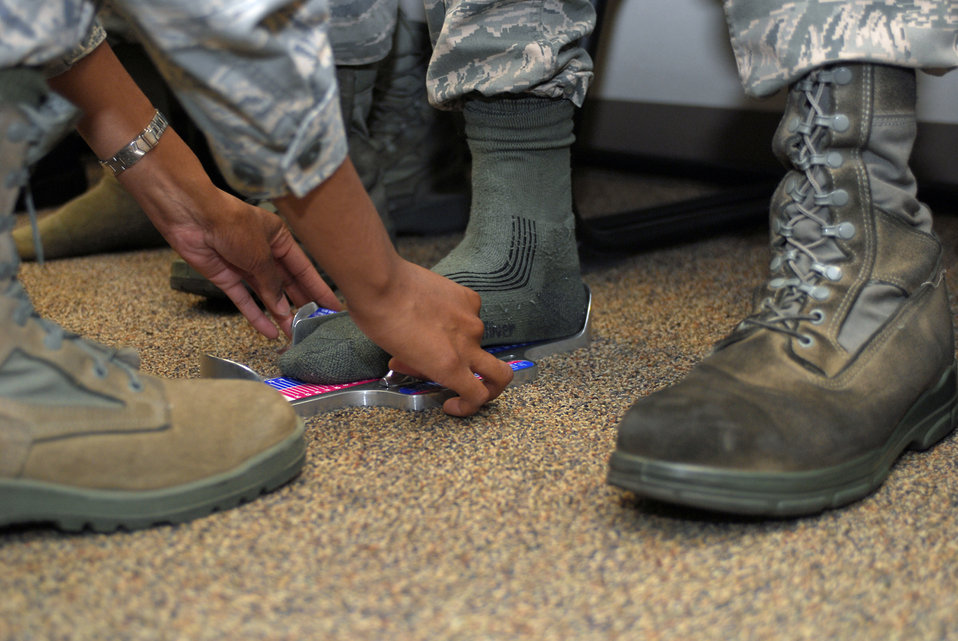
Luke Airmen to test new stain resistant footwear

About 200 Airmen were fitted to wear test a prototype stain resistant boot June 10 at Luke Air Force Base, Ariz. The current boot, seen at right, stains when exposed to industrial environments. The prototype selected will be low-maintenance and resistant to staining from harsh chemicals, oils, and fuels.